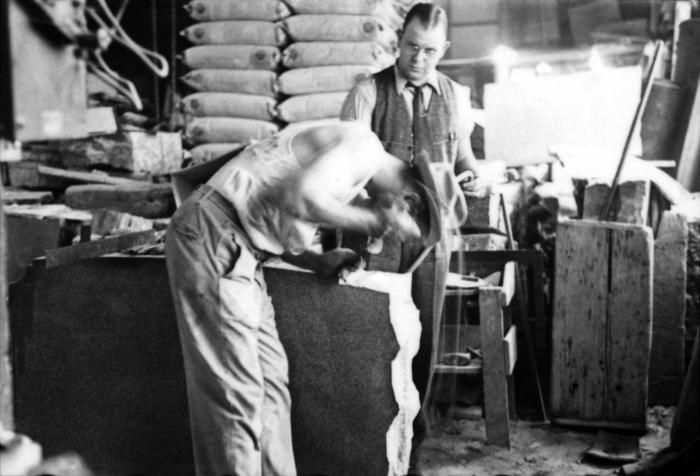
This October 1947 photograph was provided by the Center for Disease Control's (CDC), National Institute for Occupational Safety and Health (NIOSH). The image depicted a worker cutting the edge of a granite gravestone in a Kansas workshop using a unidentifiable hand-held implement. Standing next to the worker was an industrial hygienist sampling the air, in order to test for the presence of, or the quantity of airborne particulates liberated by the stone-working process. Workers can be exposed to potential respiratory health hazards, as well as other physical injuries when working in stone cutting and quarrying industries.